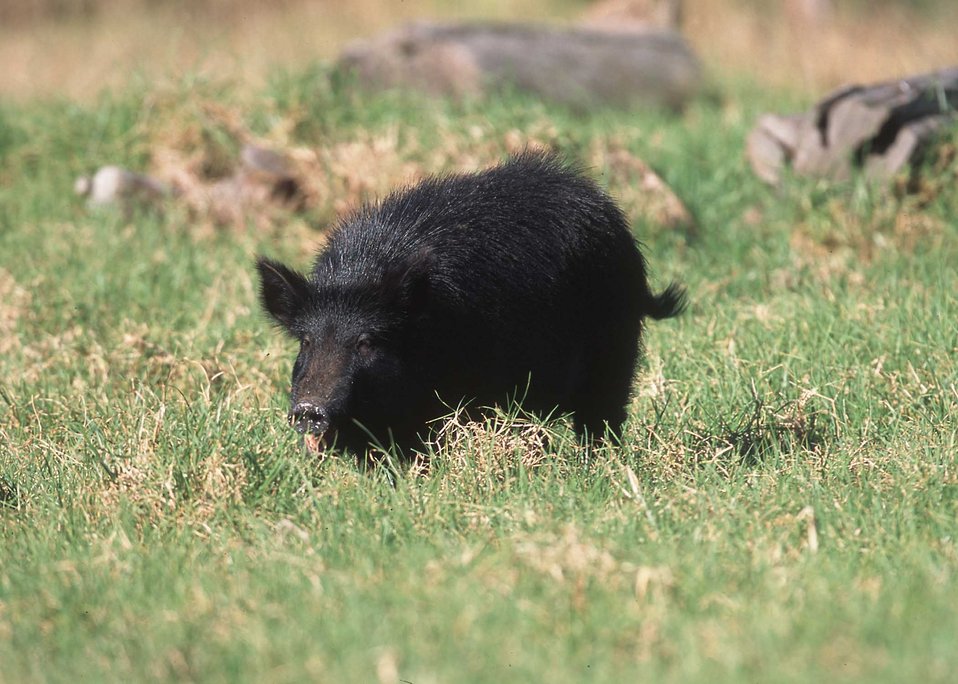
Ferel Hog in Hawaii.